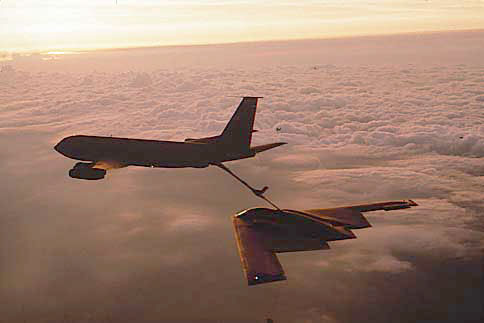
B-2 being refueled by a KC-135